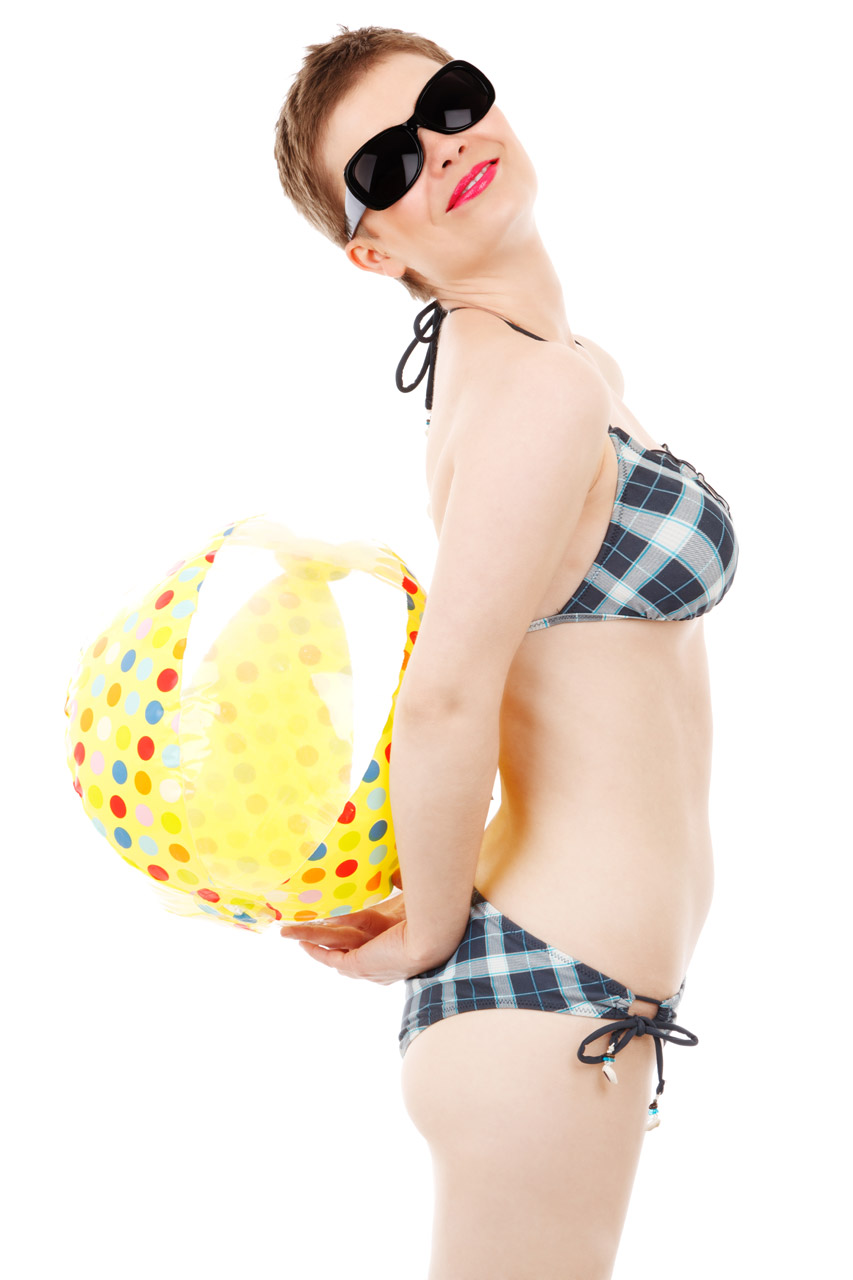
Girl in swimsuit

Young woman in bikini with a beach ball and dark sunglasses isolated on white background.